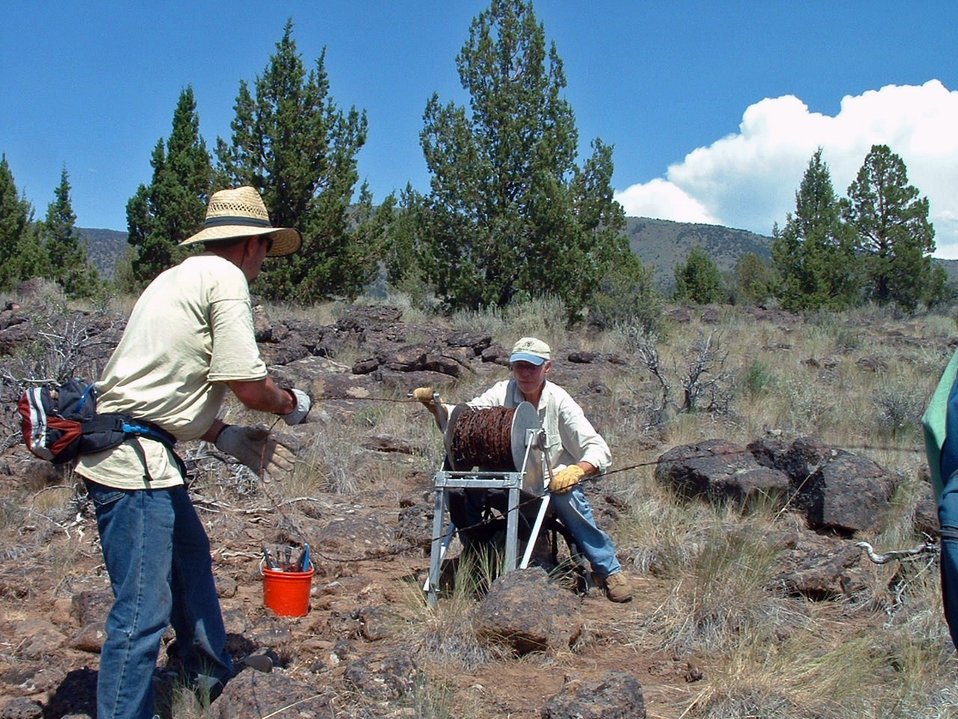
Volunteers work with BLM to remove over a 100 miles of old fence.